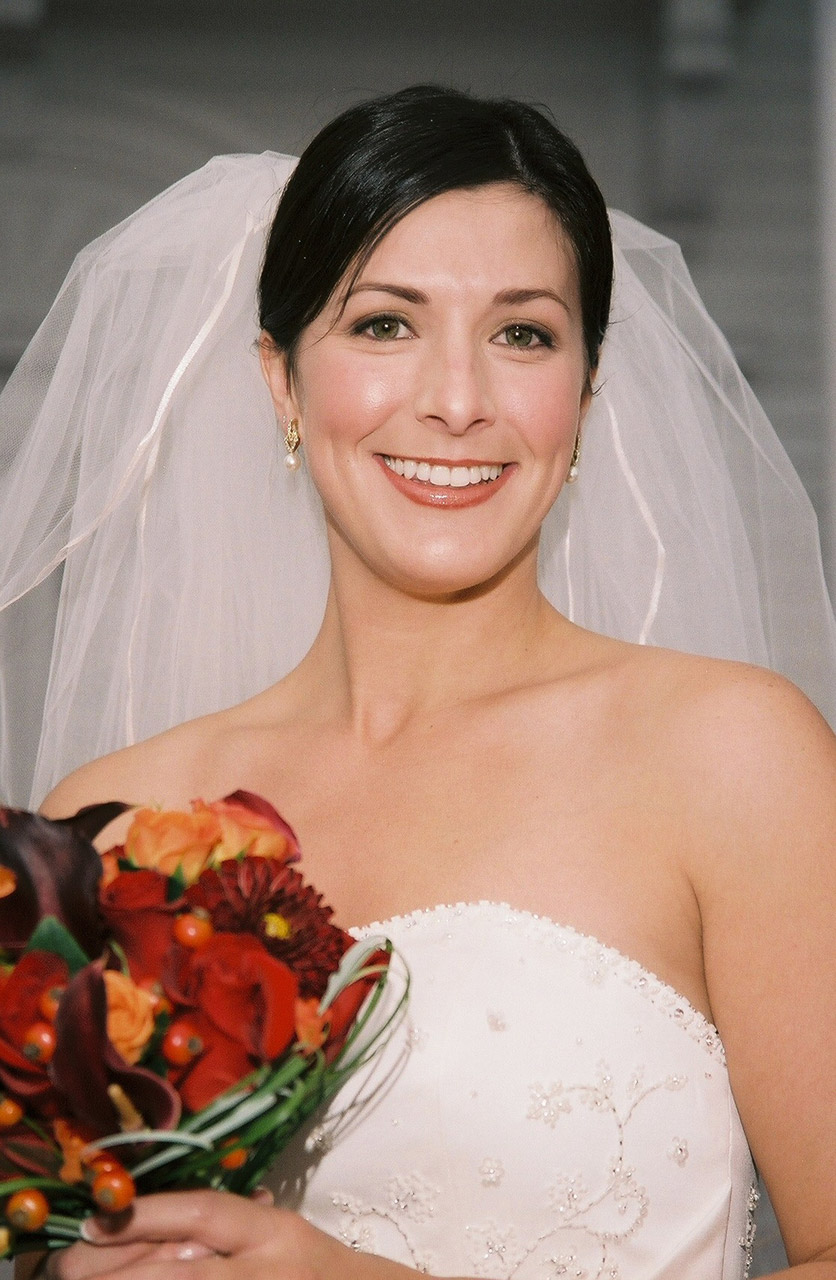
Bride

Brunette bride.